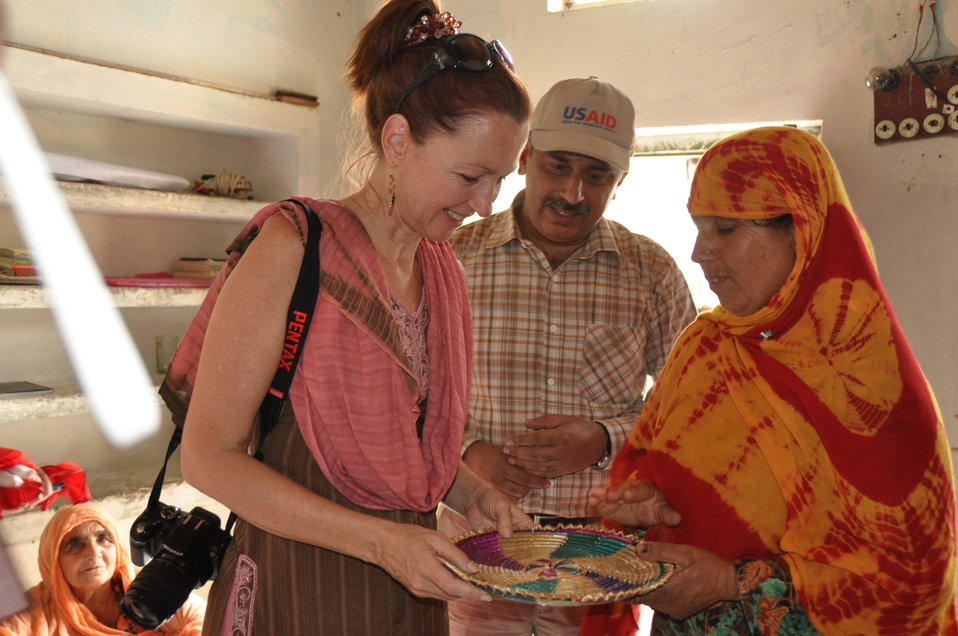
USAID Gender Equity Program